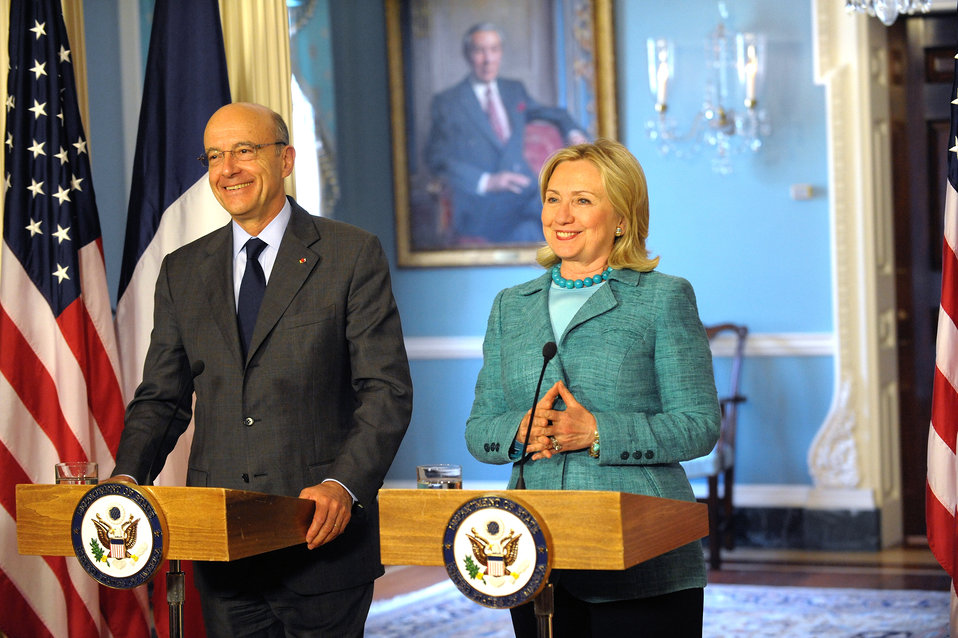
Secretary Clinton and French Foreign Minister Juppe Hold a Joint Press Conference

U.S. Secretary of State Hillary Rodham Clinton and French Foreign Minister Alain Juppe hold a joint press conference after their bilateral meeting, at the U.S. Department of State in Washington, D.C., on June 6, 2011.